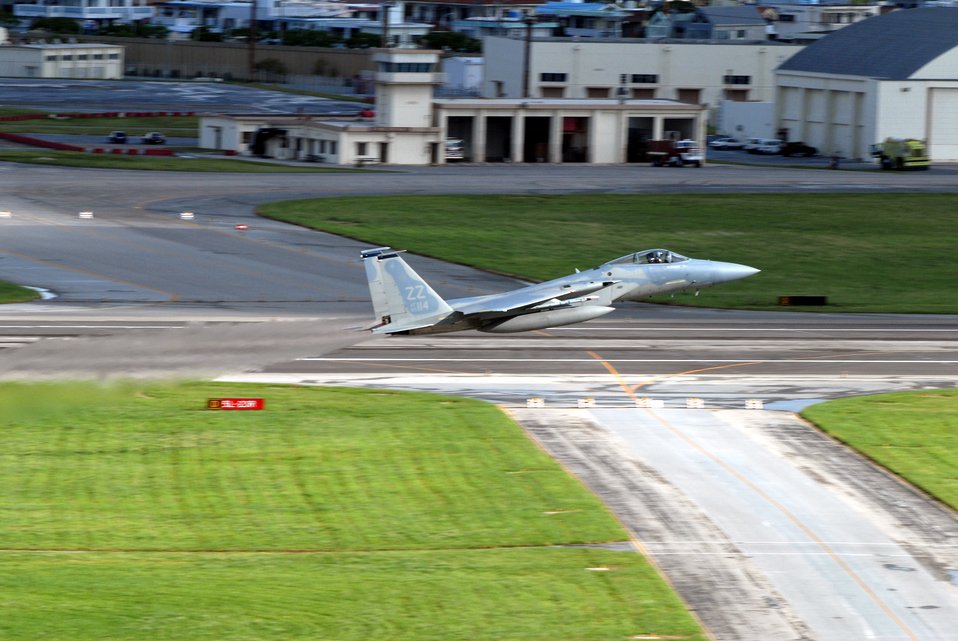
Valiant Shield exercise brings services together

An F-15 Eagle from Kadena Air Base, Japan, takes off for Guam Aug. 5 to take part in exercise Valiant Shield. The fighter is taking part in the 22,000-plus participant, joint service exercise Valiant Shield which runs through Aug. 14.